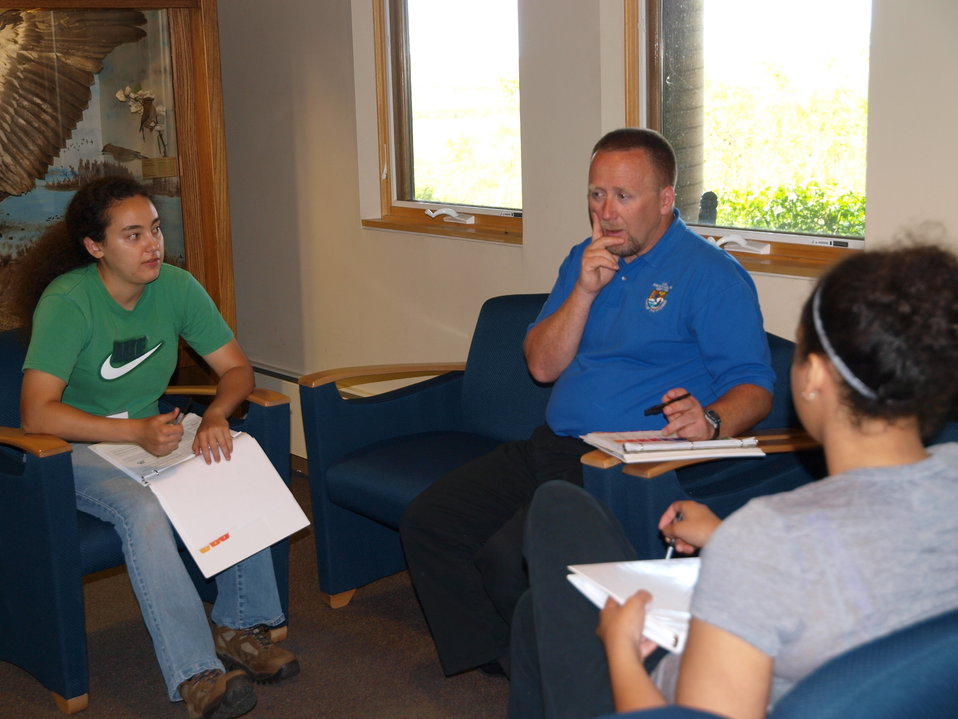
CDIP 2012 Fergus Falls

Doug and mentees - Alexis and Candyce